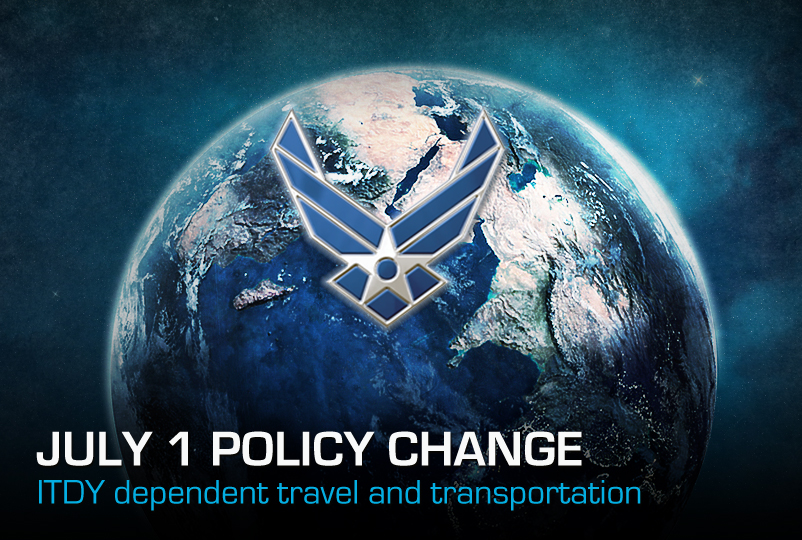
July 1 Policy Change